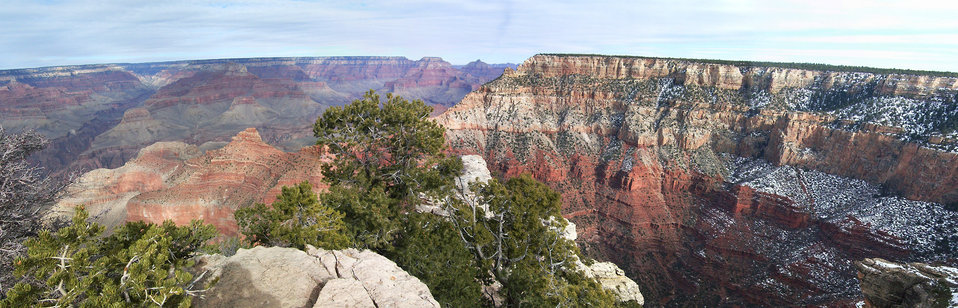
Grand canyon south rim panoramic

Grand canyon national park, arizona, usa - south rim panoramic.